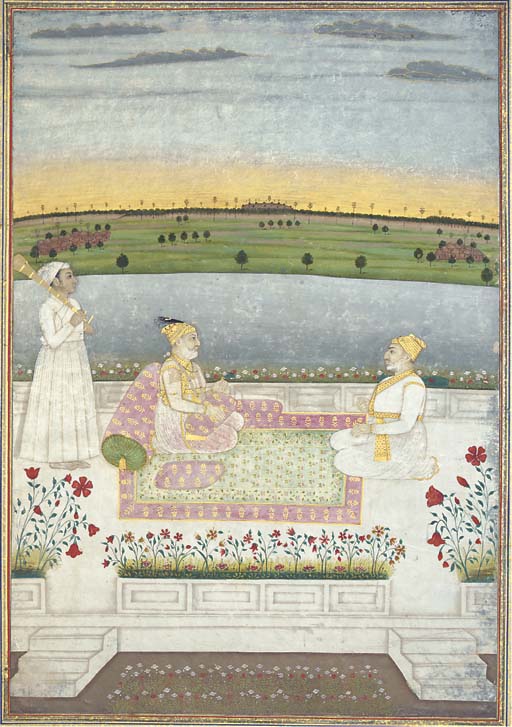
Lot Description 'ALIVARDI KHAN AND A COURTIER MURSHIDABAD, CIRCA 1745 AD Gouache heightened with gold on paper, the ruler seated on a terrace holding a gold ring with a courtier, an attendant standing behind him, mounted on an album leaf Miniature 13¾ x 9¾in. (35 x 25cm. 'Alivardi Khan arrived in Bengal in 1720 and through outstanding ability was appointed to the post of Nawab's deputy in Bihar. Through a powerful alliance with his brother he eventually acceded to the position of Nawab in 1740.')